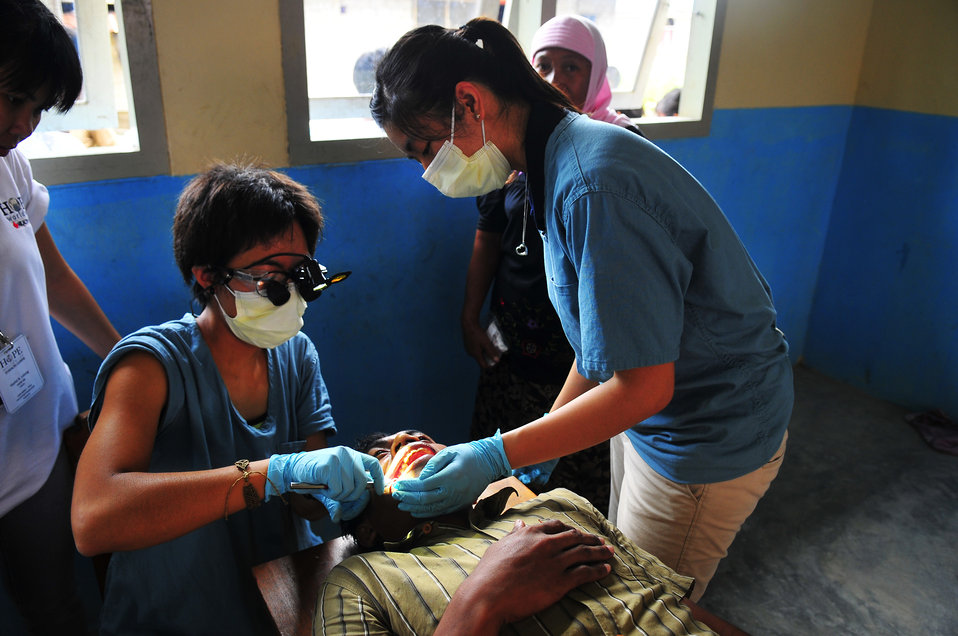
Sussi Yamaguchi Examines a Local Indonesian Patient

Sussi Yamaguchi, a dentist volunteer with the University of California San Diego Pre-Dental Society which is currently embarked with the Military Sealift Command hospital ship USNS Mercy (T-AH 19), examines a local Indonesian patient during a medical civic action program organized by the Military Sealift Command hospital ship USNS Mercy (T-AH 19) on July 21, 2010, in Ternate, Indonesia. Mercy is deployed for Pacific Partnership 2010, the fifth in a series of annual U.S. Pacific Fleet endeavors conducted in Indonesia as a disaster relief exercise aimed at strengthening regional partnerships.